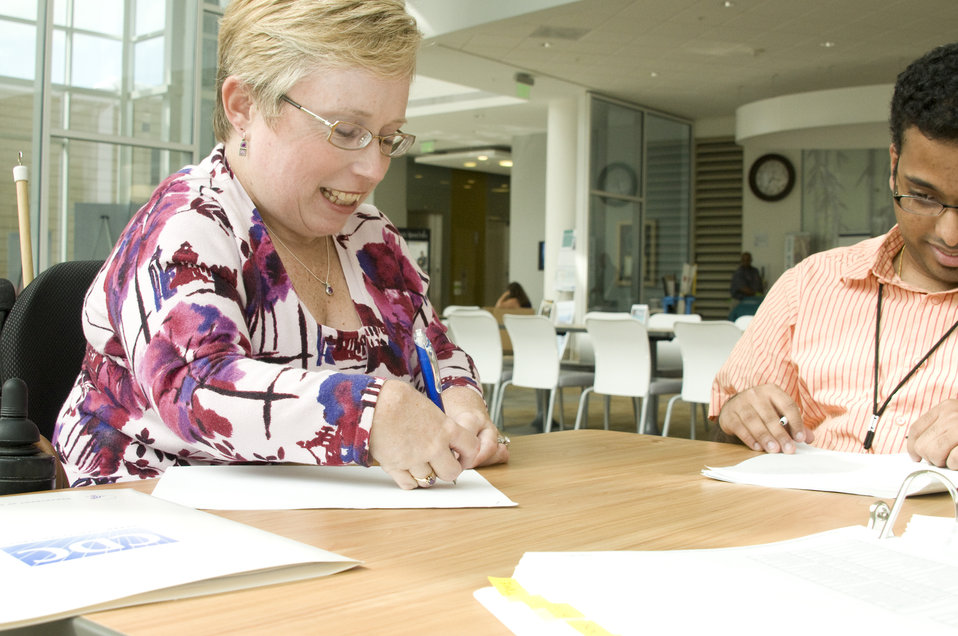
This image depicts two people who'd met on a Centers for Disease Control (CDC) Atlanta, Georgia campus in order to conduct a meeting. Both were seated in wheelchairs, and both appear to have overcome their disabilities, carrying out their daily activities with the need of little assistance. What was important, was the highly-accessible environment made available to these individuals, which is an organization-wide goal, and which included access to all campus facilities.